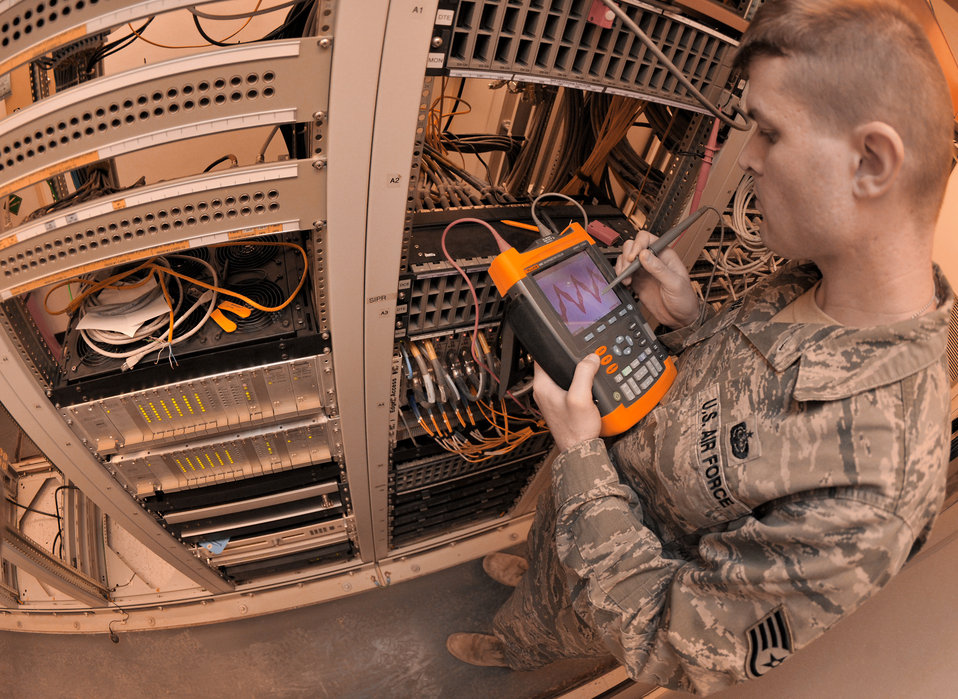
COB Speicher

Staff Sgt. Tim Voliva looks at the signal strength of the facility through an oscilloscope Jan. 22, 2011, on Contingency Operating Base Speicher, Iraq. Sergeant Voliva is the technical-control-facility NCO in charge.